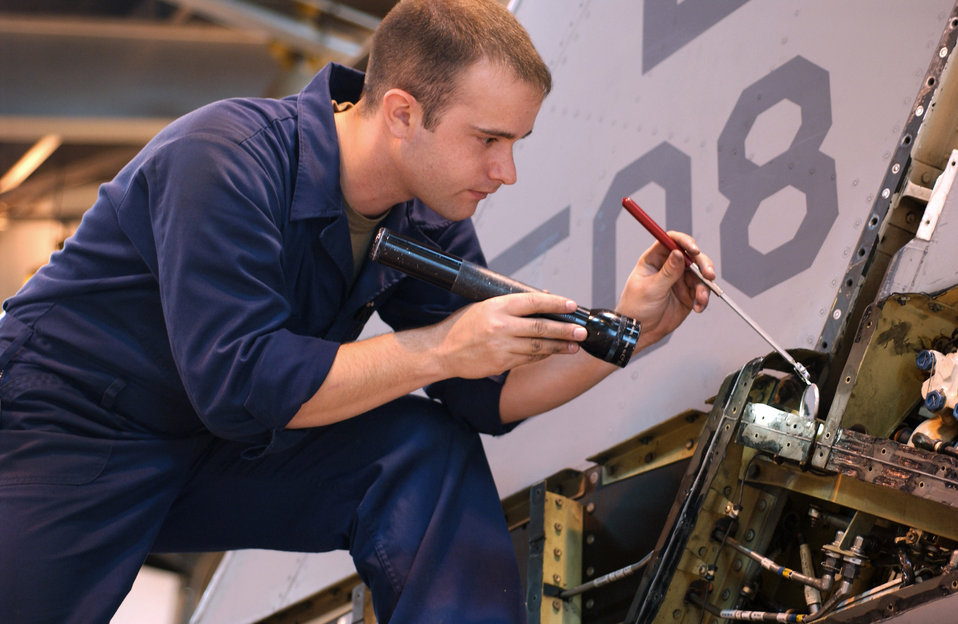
Getting ready for QA

LUKE AIR FORCE BASE, Ariz. -- Airman 1st Class Joel Thill checks for foreign objects, debris, and any missing items before a quality assurance inspection here recently. Airman Thill is an F-16 crew chief assigned to the 56th Equipment Maintenance Squadron.